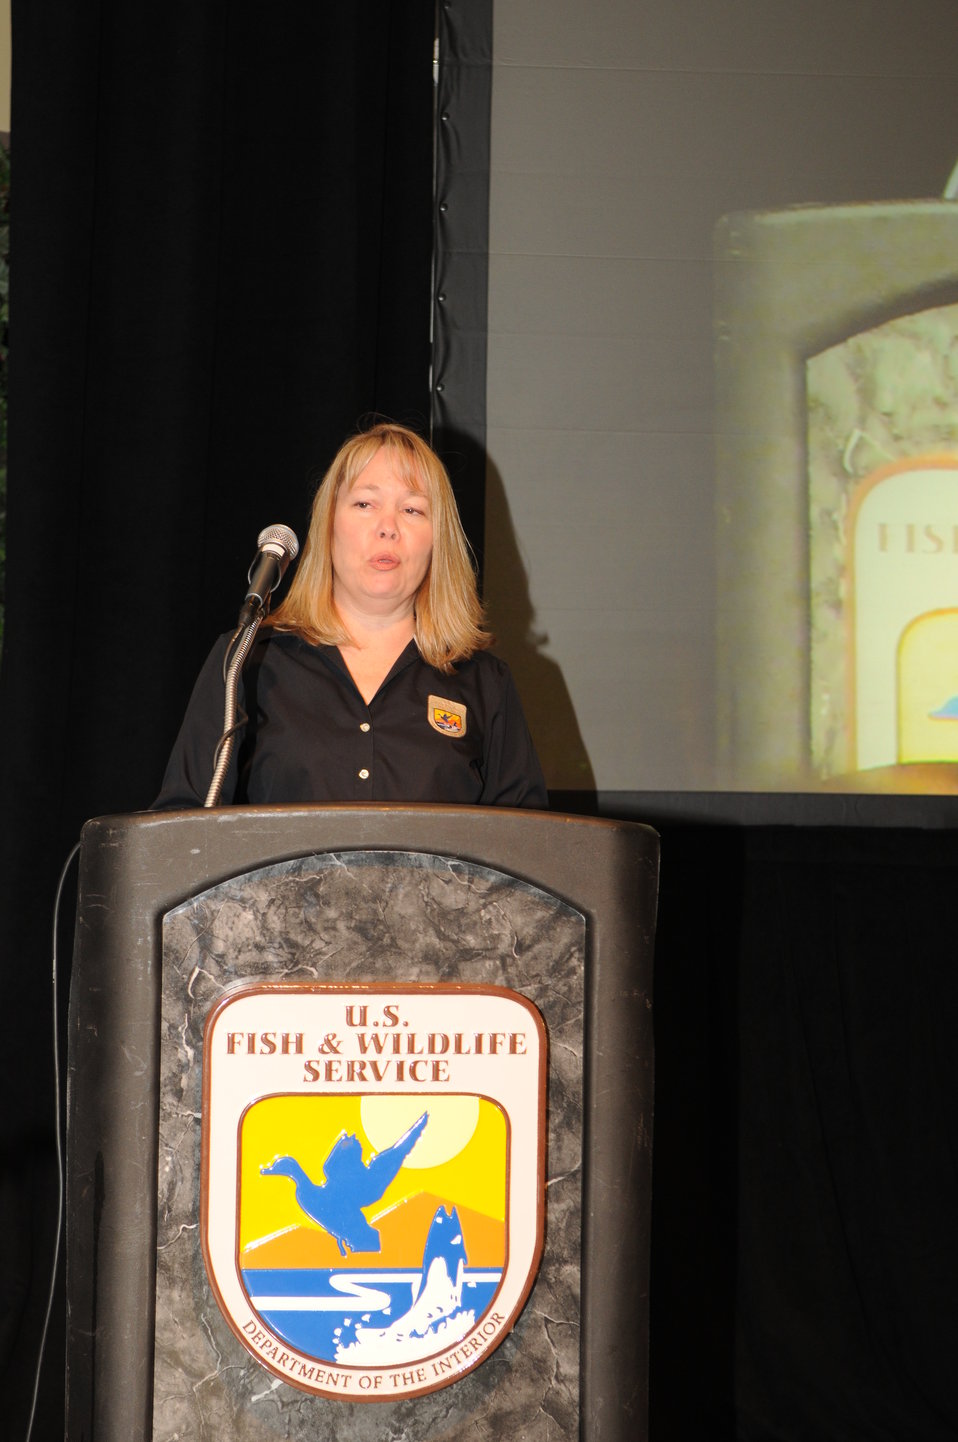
Opening Remarks

The U.S. Fish & Wildlife Service sponsored the 2012 Federal Duck Stamp Art Contest September 28 and 29 in Ogden, Utah, at Weber State University. A panel of five judges was responsible for choosing the art work used to design the 2013-2014 Migratory Bird Hunting and Conservation Stamp.